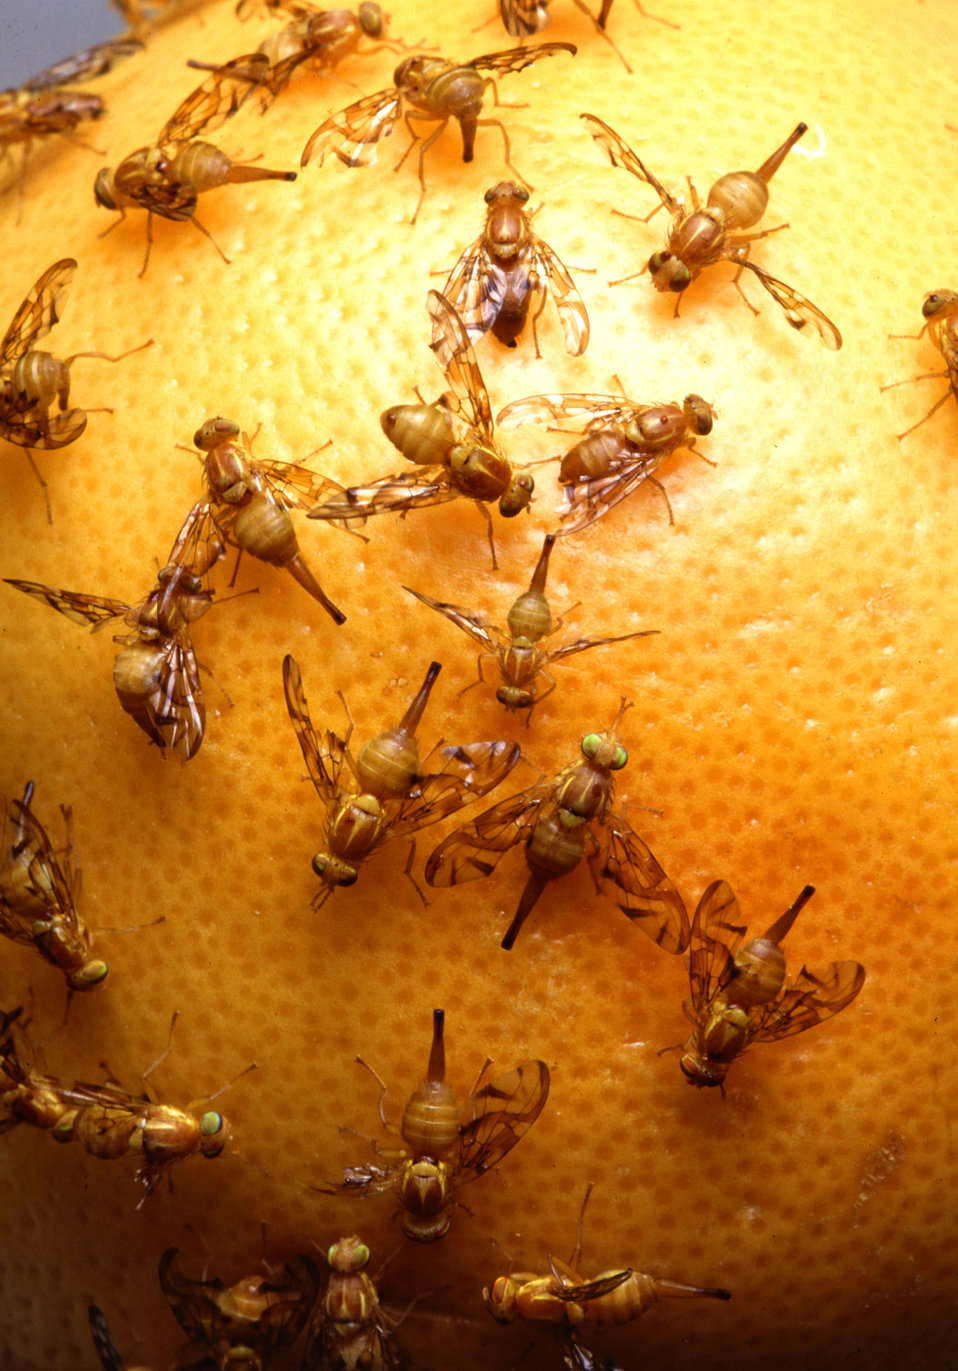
Mexican fruit flies lay eggs in grapefruit before a test of the reduced-oxygen treatment.